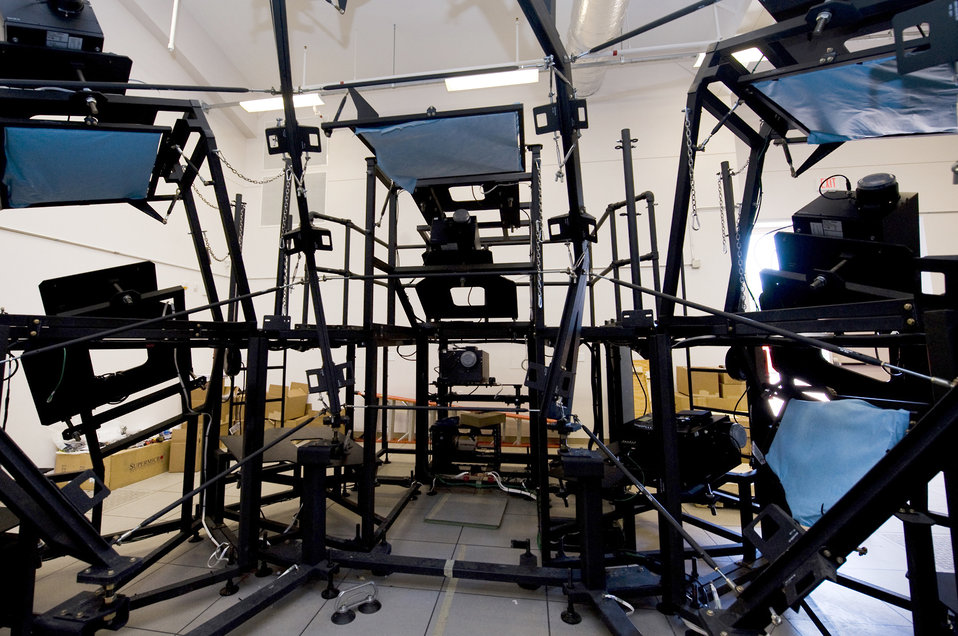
F-16 flight simulator

The outer frame of the new F-16 Fighting Falcon Mission Training Center flight simulator stands completed June 13, 2011, during the installation phase at Nellis Air Force Base, Nev.